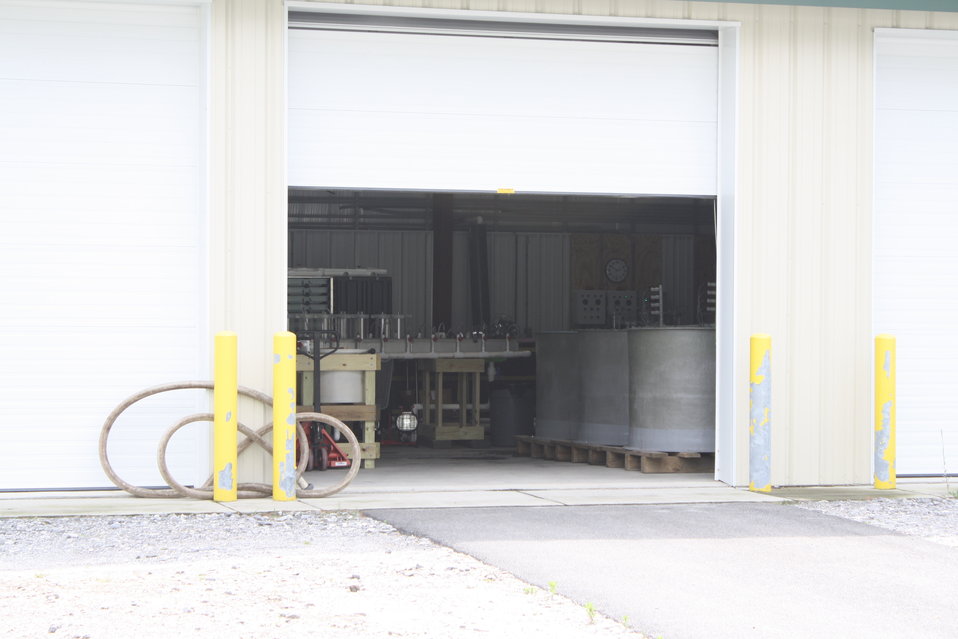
Nashua National Fish Hatchery welcomes regional office employees

Entering the Fish Hatchery.